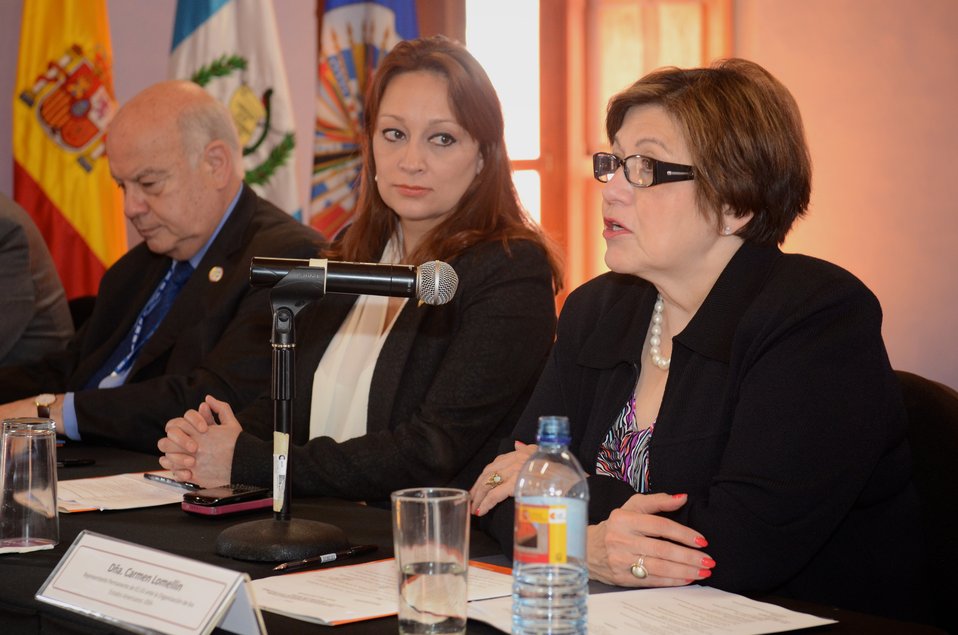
Ambassador Lomellin Delivers Remarks at a Roundtable on 'Building Sustainable Cities and Communities in the Americas'

Ambassador Carmen Lomellin, U.S. Permanent Representative to the Organization of American States, delivers remarks during a roundtable on Building Sustainable Cities and Communities in the Americas in La Antigua, Guatemala, on June 3, 2013.